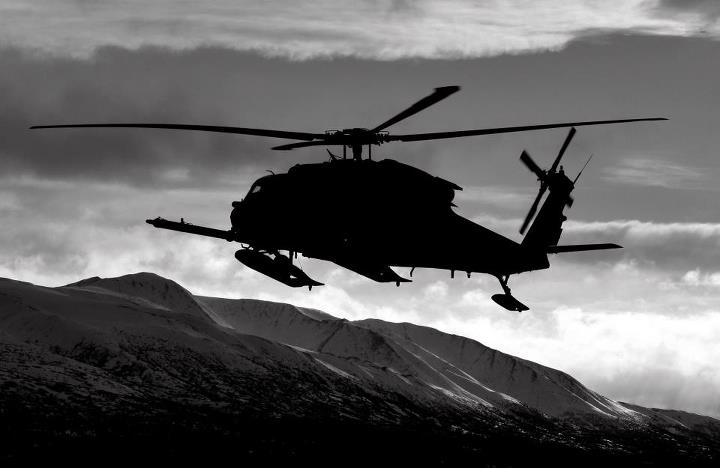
Alaska Air National Guard rescue missions

An Alaska Air National Guard HH-60 Pave Hawk helicopter flies over Alaska during a winter training mission.